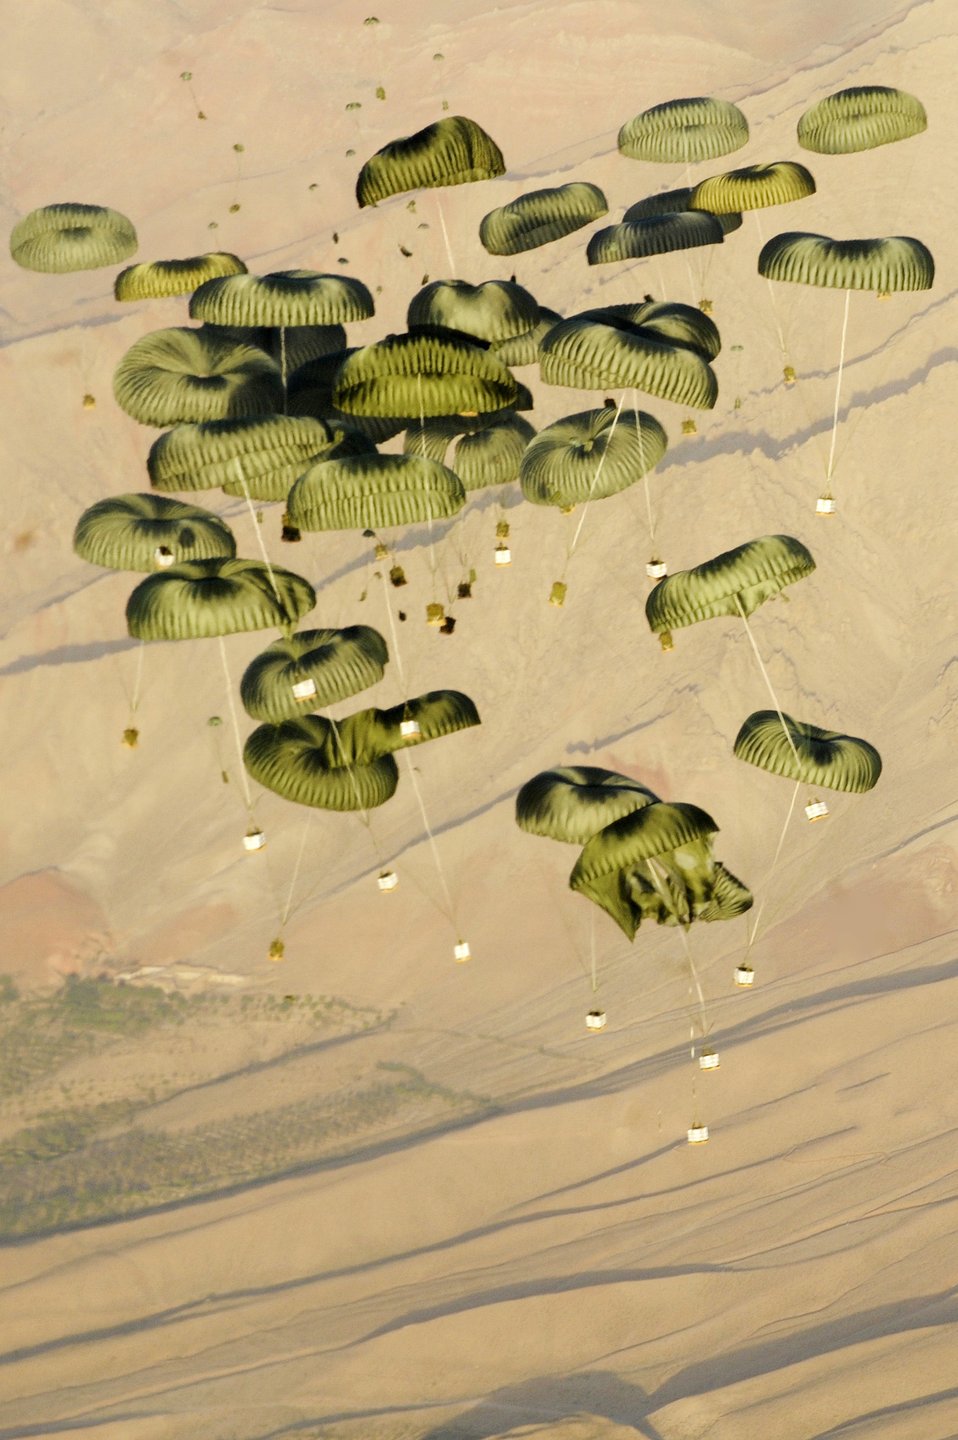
Supply drop in Afghanistan

Pallets of cargo drop from a C-17 Globemaster III to a forward operating base in Afghanistan, Aug. 27, 2009, in support of Operation Enduring Freedom. The aircraft is assigned to the 817th Expeditionary Airlift Squadron.